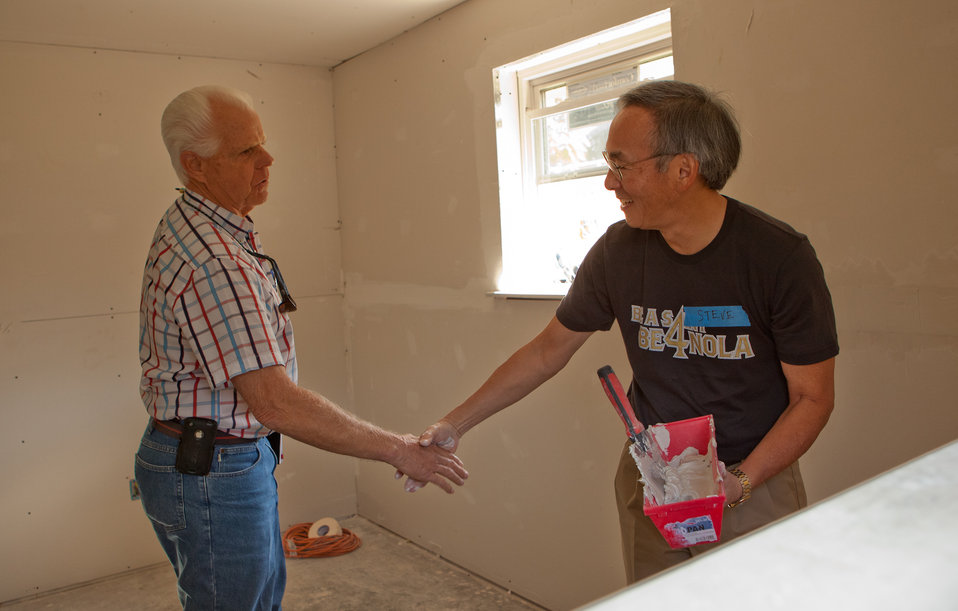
Veteran's Day in New Orleans 5 of 10

Sec. Chu and veteran James MacQueen, construction manager for The Saint Bernard Project, shake hands while mudding walls.